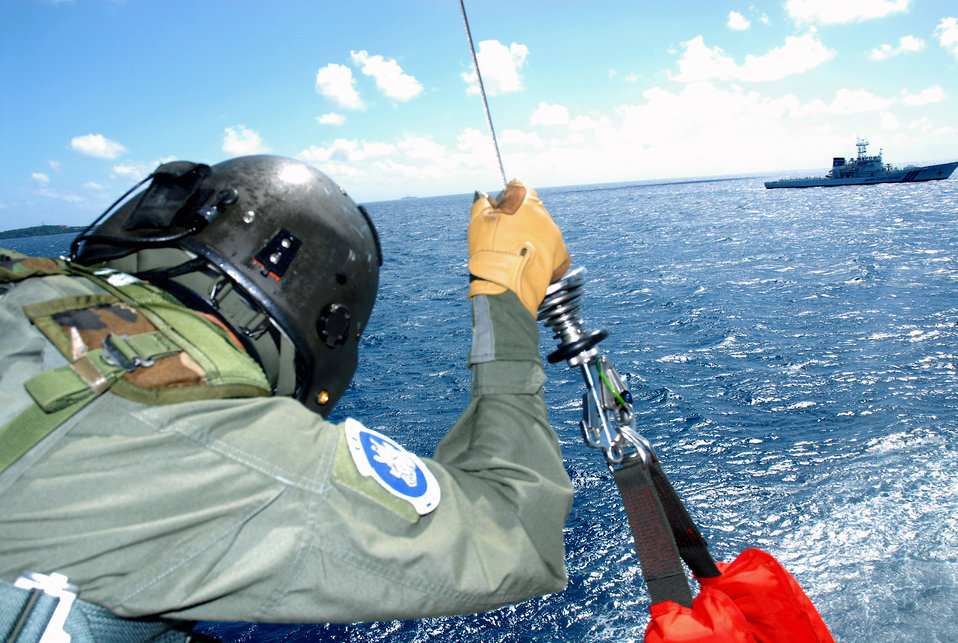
To the rescue

Master Sgt. Ernest Garcia waits for a signal from the pararescue Airman in the water to bring the downed pilot onboard an HH-60G Pave Hawk during a crisis management exercise Oct. 8 off the coast of Okinawa, Japan. Members of the 18th Wing from Kadena Air Base, Japan, and the Japanese coast guard rehearsed response procedures for a simulated over the water aircraft accident. Sergeant Garcia is a flight engineer assigned to the 33rd Rescue Squadron.